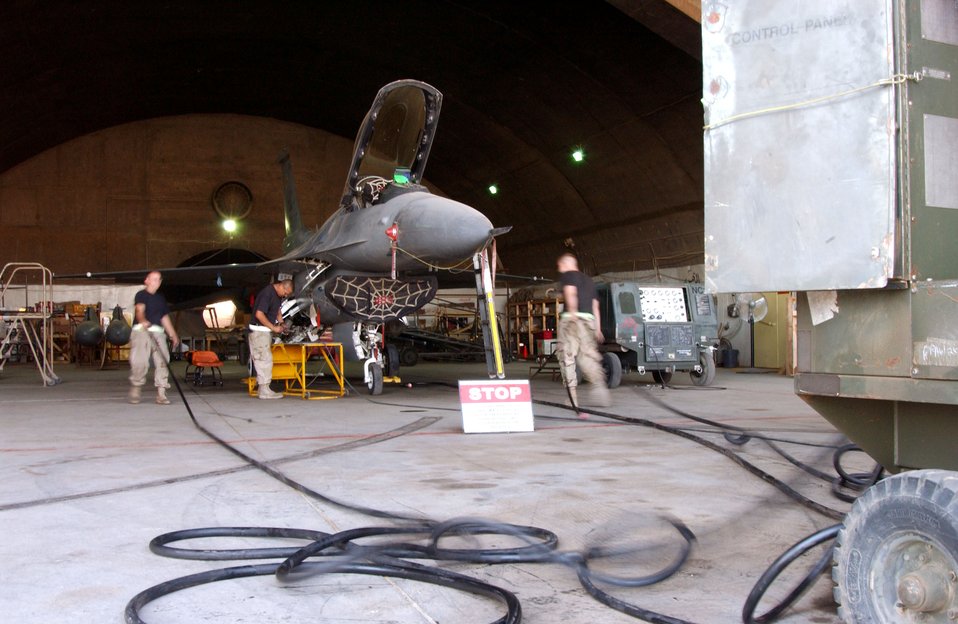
Maintenance teams work to keep F-16s flying

Maintainers with the 332nd Expeditionary Maintenance Squadron perform a phase inspection on an F-16 Fighting Falcon at Balad Air Base, Iraq. The 421st and 555th Fighter Squadrons' aircraft undergo the phase inspections every 400 and 300 hours respectively.